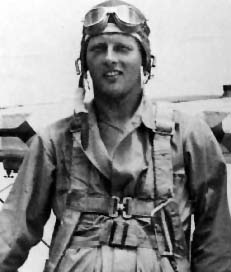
Capt. John S. Walmsley Jr.

1950s -- Capt. John S. Walmsley Jr.